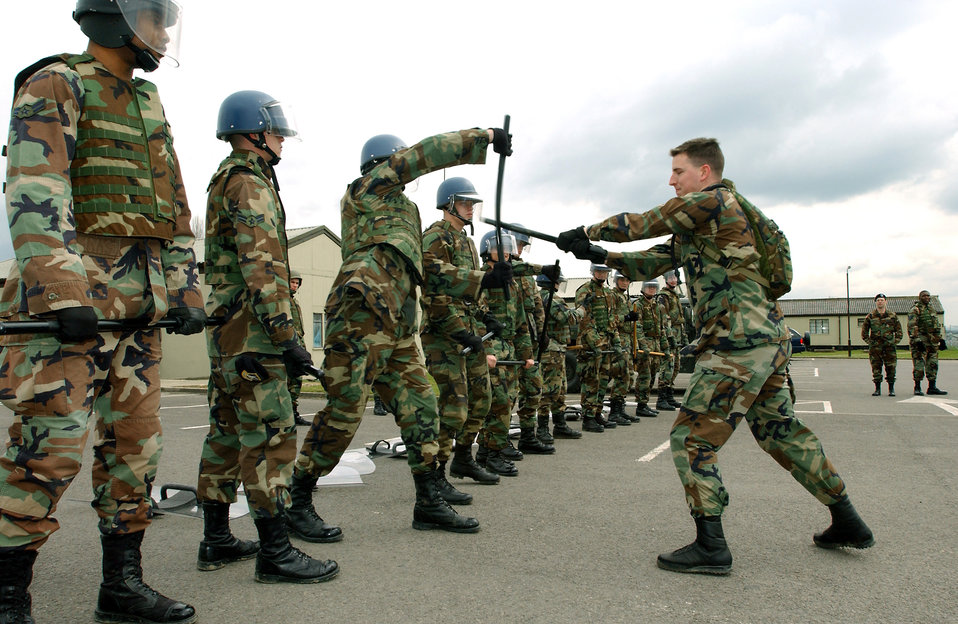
Riot control

ROYAL AIR FORCE FAIRFORD, England - First Lt. Matthew A. Lillis conducts confrontational management training for Airmen in his squadron, emphasizing the importance of riot control at Royal Air Force Mildenhall, England. Lieutenant Matthew is a member of the 100th Security Forces Squadron.